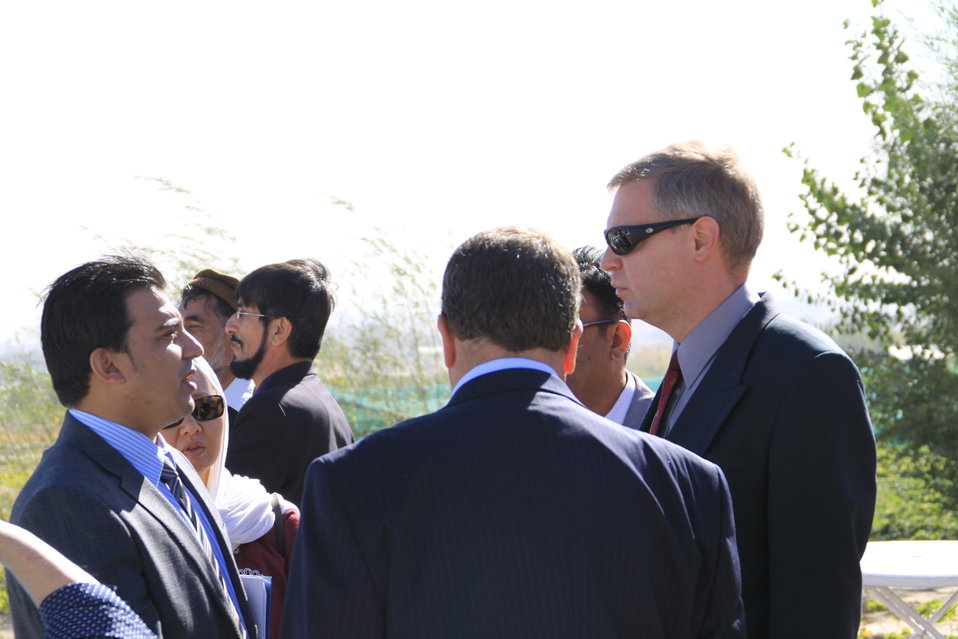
AVIPA Plus Wheat Seed Distribution 101005

US Ambassador Karl Eikenberry and USAID Acting Mission Director Kevin Brownawell joined the Minister of Agriculture, Irrigation and Livestock, H.E. Minister Mohammed Rahimi in signing a Memorandum of Understanding and distributing vouchers to area farmers for wheat and fertilizer.